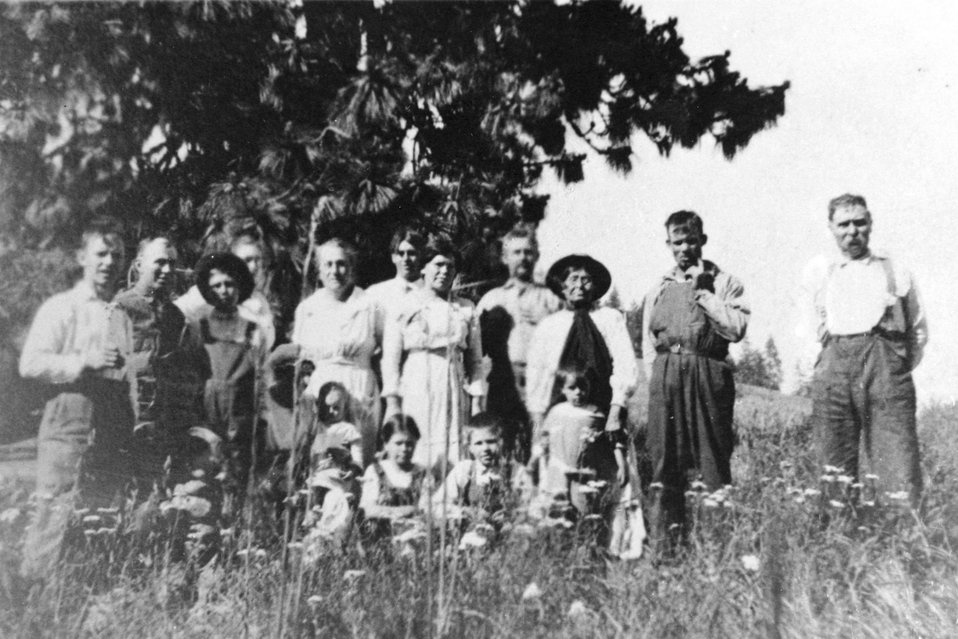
Picnic group. Adeline is on the right.